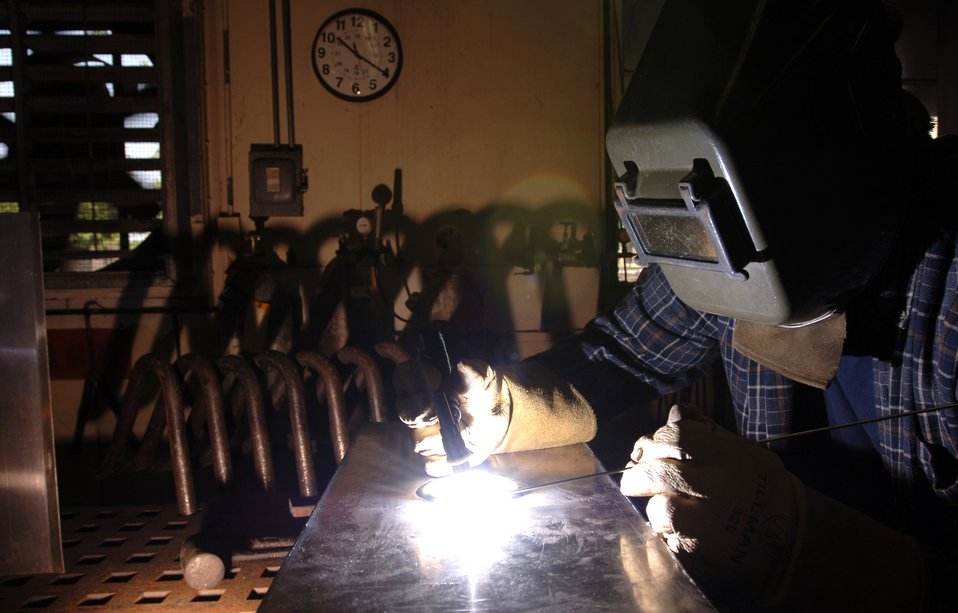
Flight builds training replicas, saves money

Michael Cleveland builds a trainer for the fuels aircraft technical training school at Sheppard Air Force Base, Texas, on Wednesday, July 19. A trainer is a functional replica of a training tool that can range from an aircraft engine or landing gear to a mold of teeth. Mr. Cleveland is a metals processing specialist from the 982nd Maintenance Squadron.